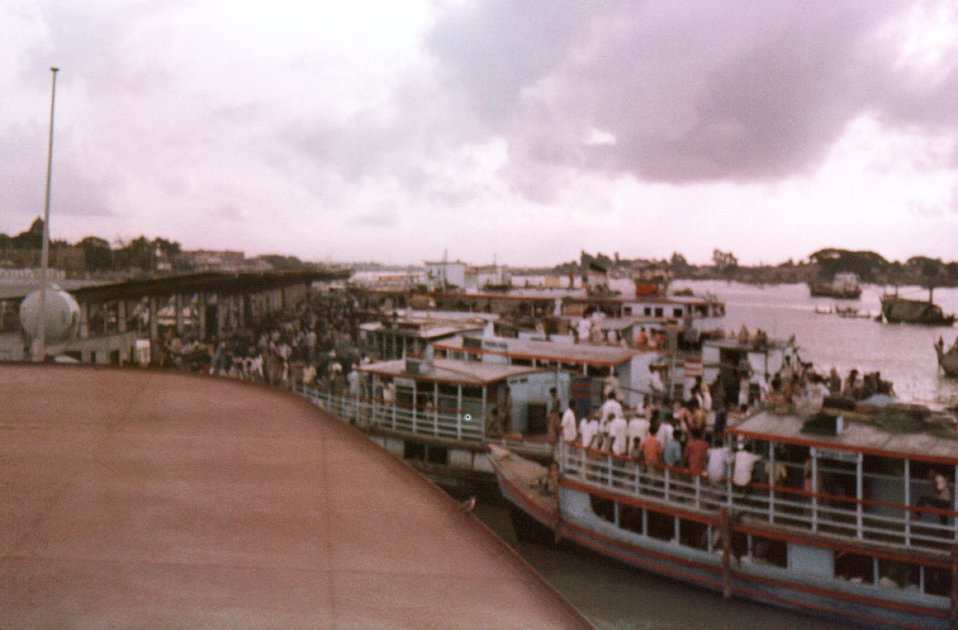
This was the Sader Ghat Ferry Terminal, located in Dhaka, Bangladesh, on the Buriganga River, in September, 1975.